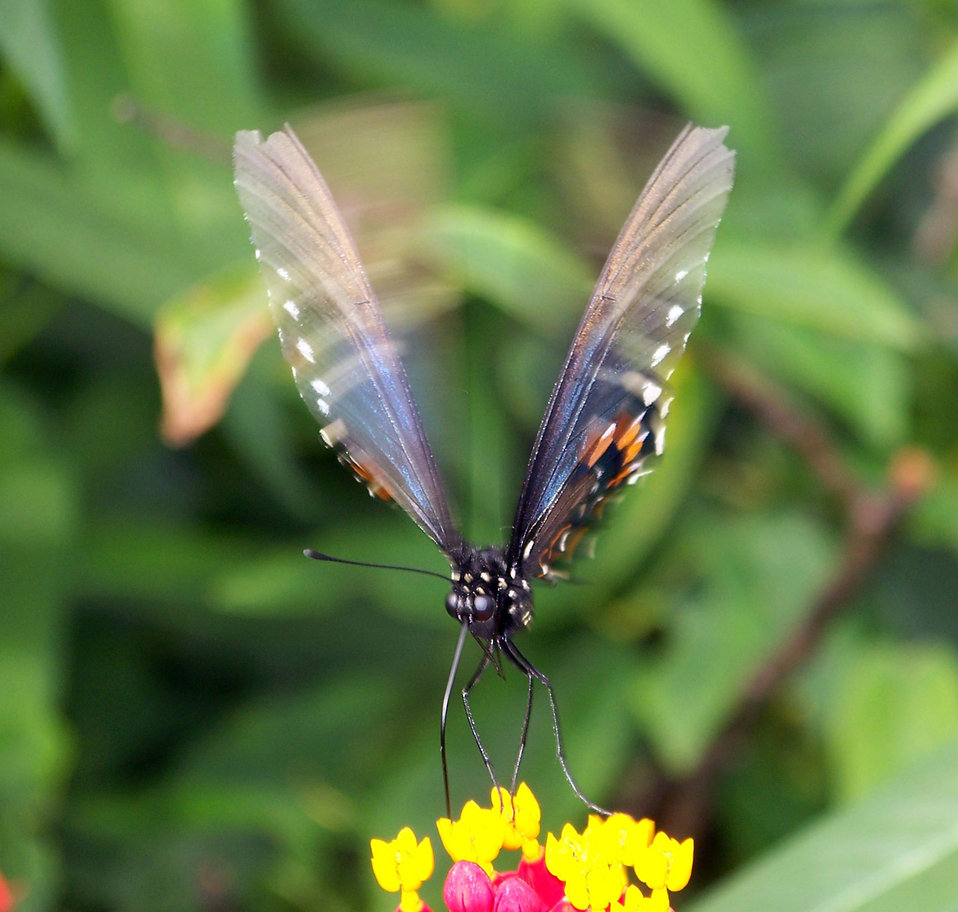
Butterfly in motion

Butterfly on flower with wings in motion.